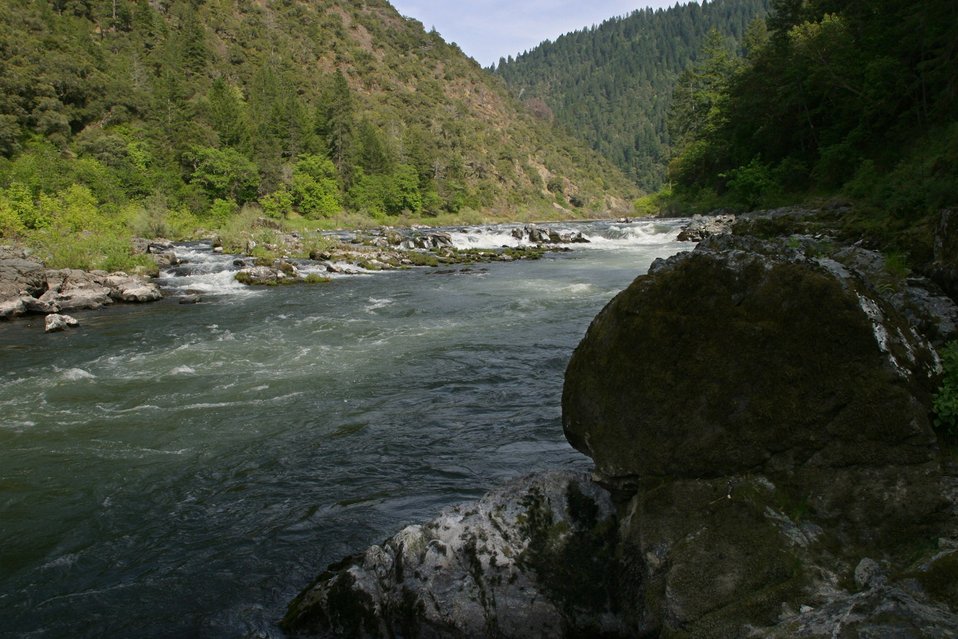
Rainie Falls on the Wild section of the Rogue River from Grave Creek to Foster Bar. 3100 cfs at Grants Pass and 5300 at Agness.